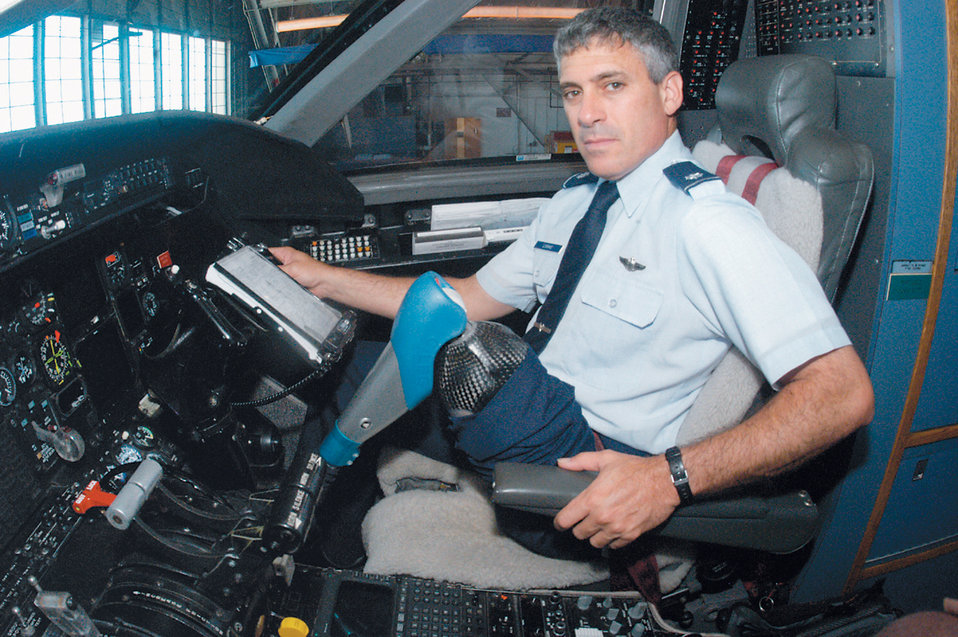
In the air again

ANDREWS AIR FORCE BASE, Md. -- Lt. Col. Andrew Lourake sits in an Air Force C-20 here. Colonel Lourake underwent an above-the-knee amputation in June 2002. He was medically cleared June 18 to return to flying status and is waiting to attend formal training to get requalified to fly.